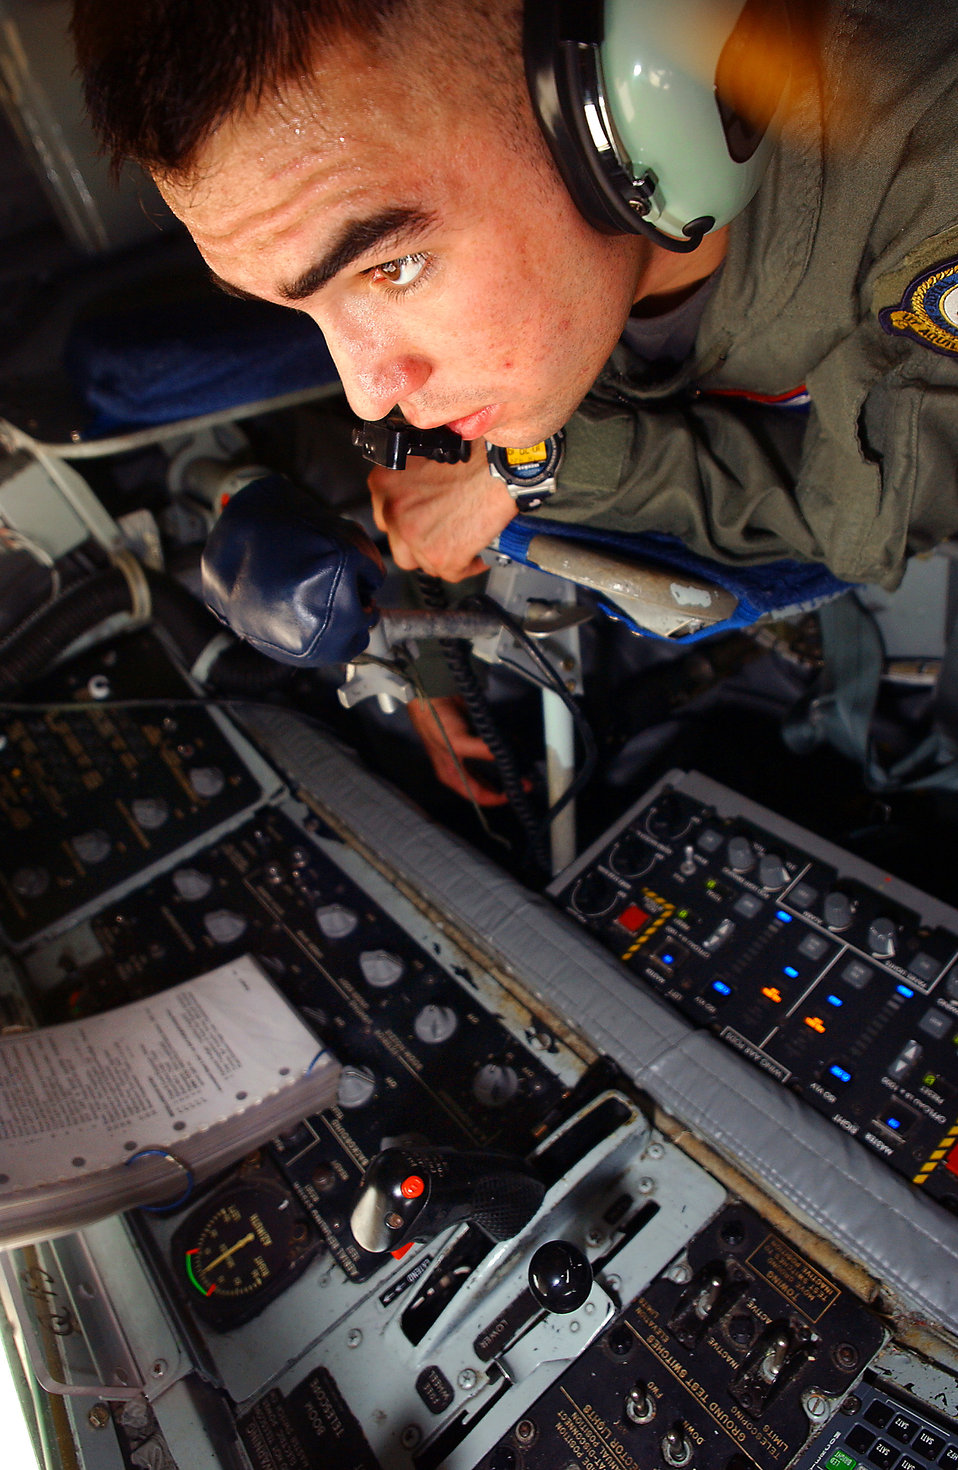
Good to go

ROYAL AIR FORCE FAIRFORD, England -- Airman 1st Class Eric Vasquez goes through his preflight checklist before a six-and-a-half-hour refueling mission. Airman Vasquez is a boom operator with the 351st Air Refueling Squadron at Royal Air Force Mildenhall, England. The squadron will fly out of here while Mildenhall's runway is being repaired.